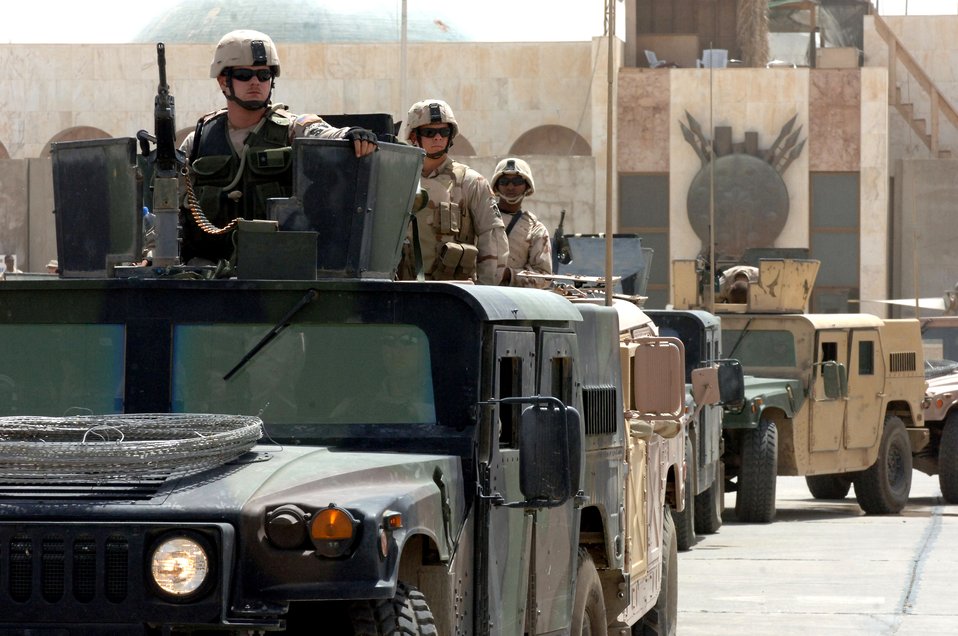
Roll out

Senior Airman Jonathon Ray sits atop the lead vehicle of a convoy of Humvees waiting to roll during a presidential security mission in Baghdad on Tuesday, June 13. Airman Ray is deployed from the Texas Air National Guard's 147th Fighter Wing at Ellington Field in Houston.